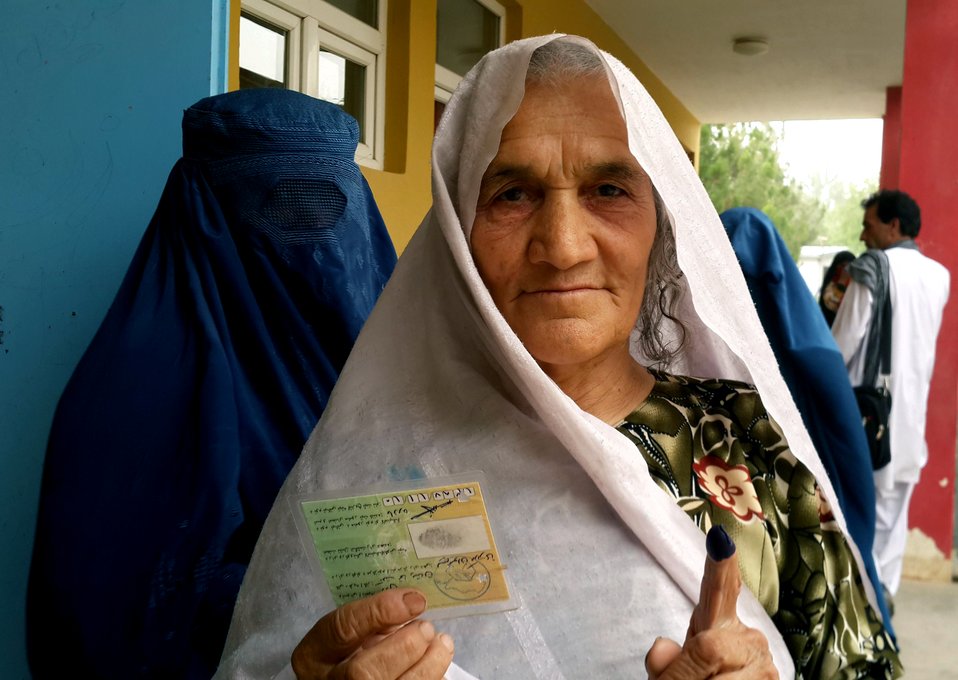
An Afghan woman shows her inked finger and voting card after casting her vote in Kunduz province.